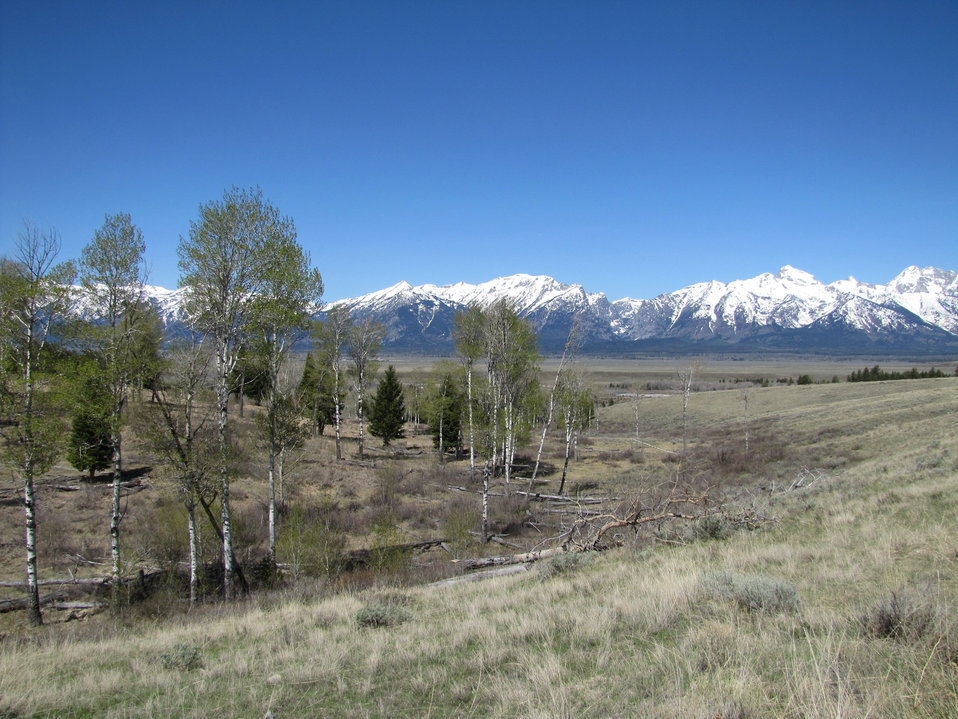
A Hillside View

This hillside view shows some of the vegetation on the northern end of the refuge. Here, sagebrush, aspen, and evergreens dot the landscape.